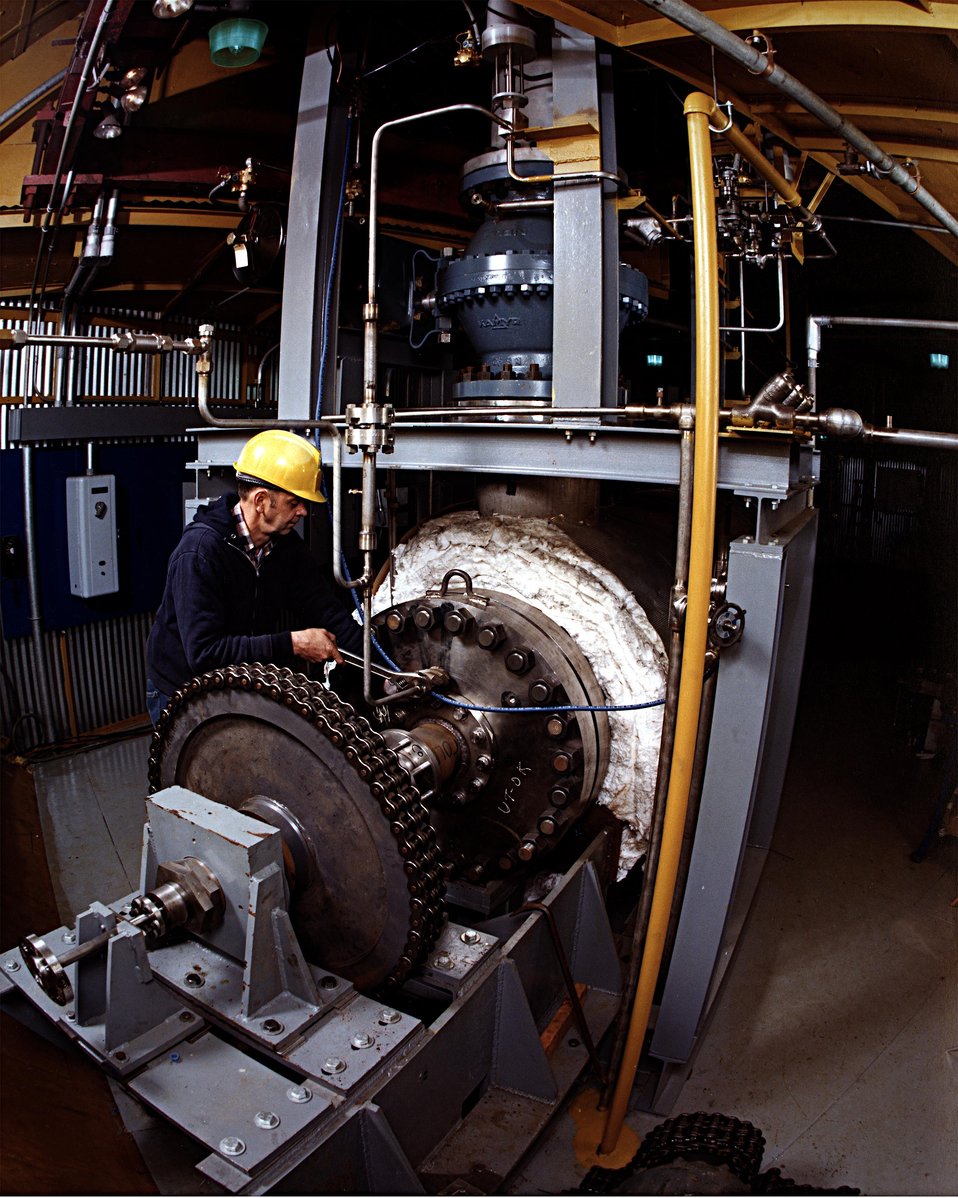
WORKER ADJUSTS THE COOL FEED END OF THE PDU AUGER KILN.

RESEARCHERS WILL ASSESS THE FEASIBILITY OF GASIFYING BIOMASS TO PRODUCE FUEL IN A SMALL, CRITICAL PRESSURE, LOW TEMPERATURE, WATER/STEAM GASIFIER. IN THE GASIFIER, BIOMASS (WOOD,PLANT OR ANIMAL WASTES, ETC.) IS MIXED WITH STEAM AND OXYGEN AT HIGH TEMPERATURES AND PRESSURES TO PRODUCE GAS, LIQUID FUELS AND/OR FUEL OIL. A LOW COST SYSTEM WAS PROPOSED, DIFFERENT TYPES OF BIOMASS WERE STUDIED, MODELS WERE ESTABLISHED, AND A THREE DRY TONS PER-DAY PROCESS DEVELOPMENT UNIT WAS DESIGNED. IN ADDITION, AN ECONOMIC ASSESSMENT WAS MADE CONCERNING THE MEDIUM BTU GAS END PRODUCT. IN UPPER MIDDLE IS A FULL BORE BALL VALVE IN THE KILNEND CAP, AUGER DRIVE, SEALS AND BEARINGS.